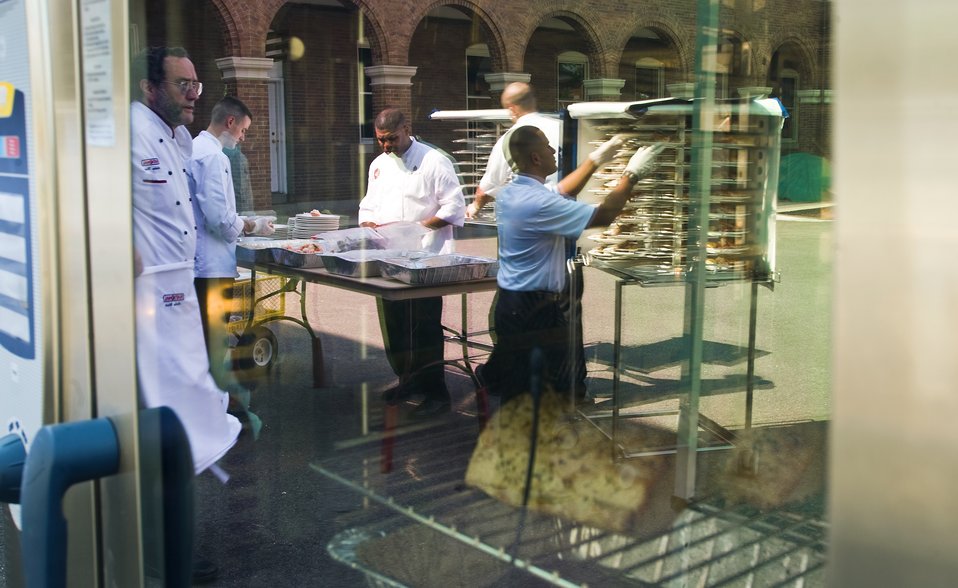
Military chefs to compete in culinary competition

Military food service specialists along with educational chefs prepare lunch at the 7th Annual Military Culinary Competition Sept. 24, 2010, in Washington DC.